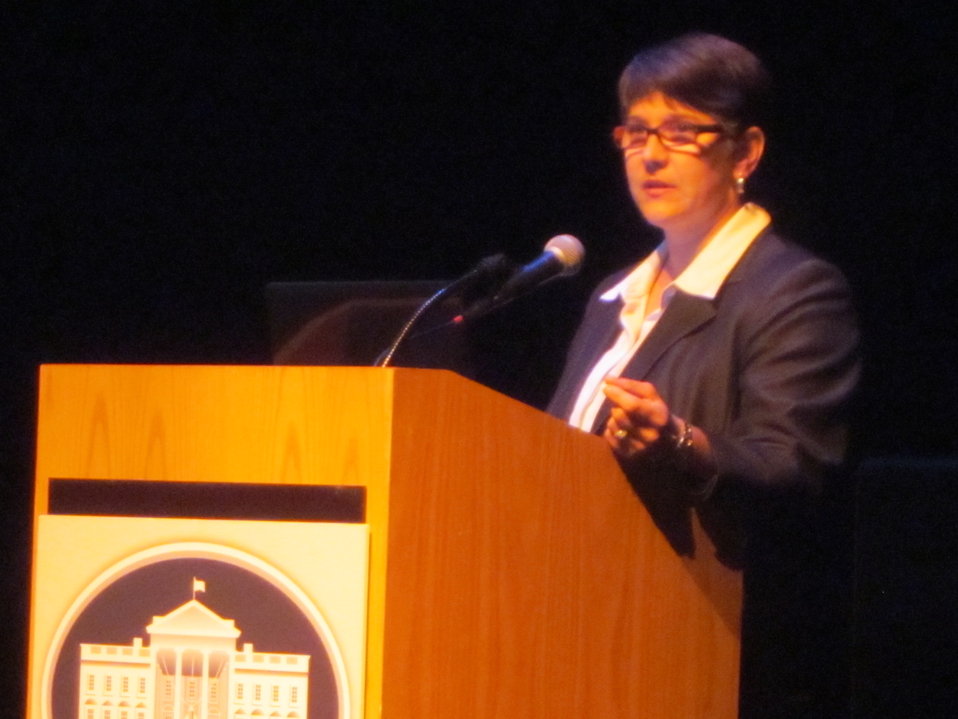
Baton Rouge Pics 040